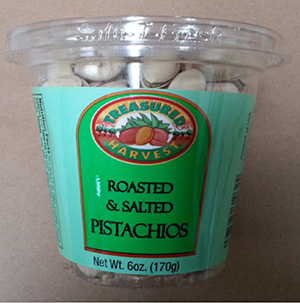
RECALLED – Roasted and Salted Pistachios

July 10, 2013 – Product Recall – Western Mixers Produce & Nuts, Inc. Recalls Pistachios Because of Possible Health Risk.